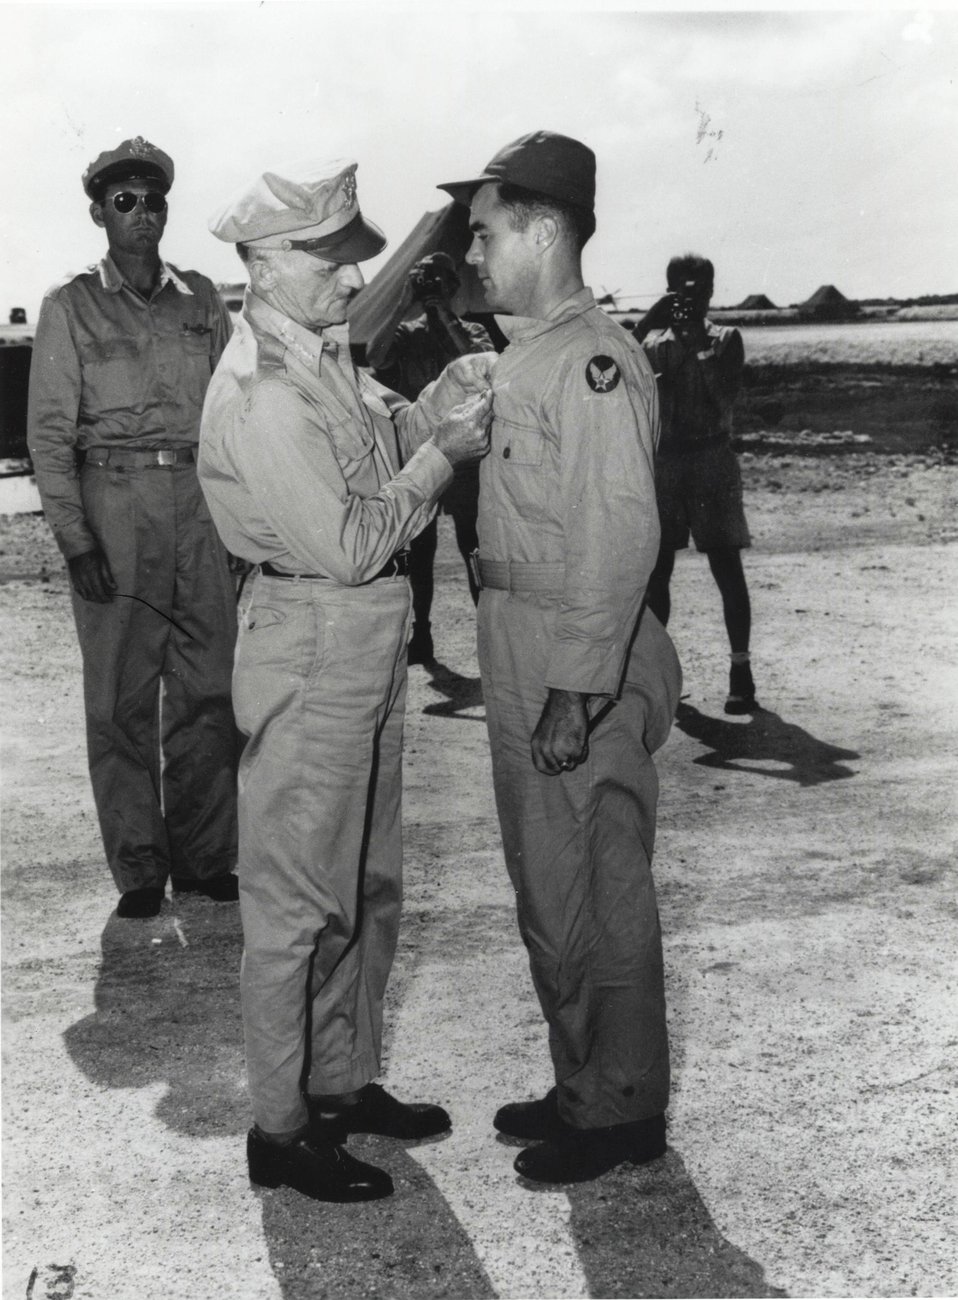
TIBBETS RECEIVES DISTINGUISHED SERVICE CROSS FROM GENERAL SPAA.